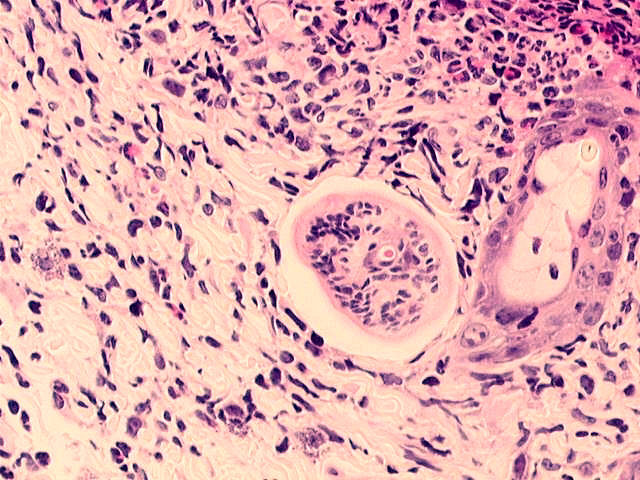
Schistosomulum in abdominal skin of a vaccinated mouse.